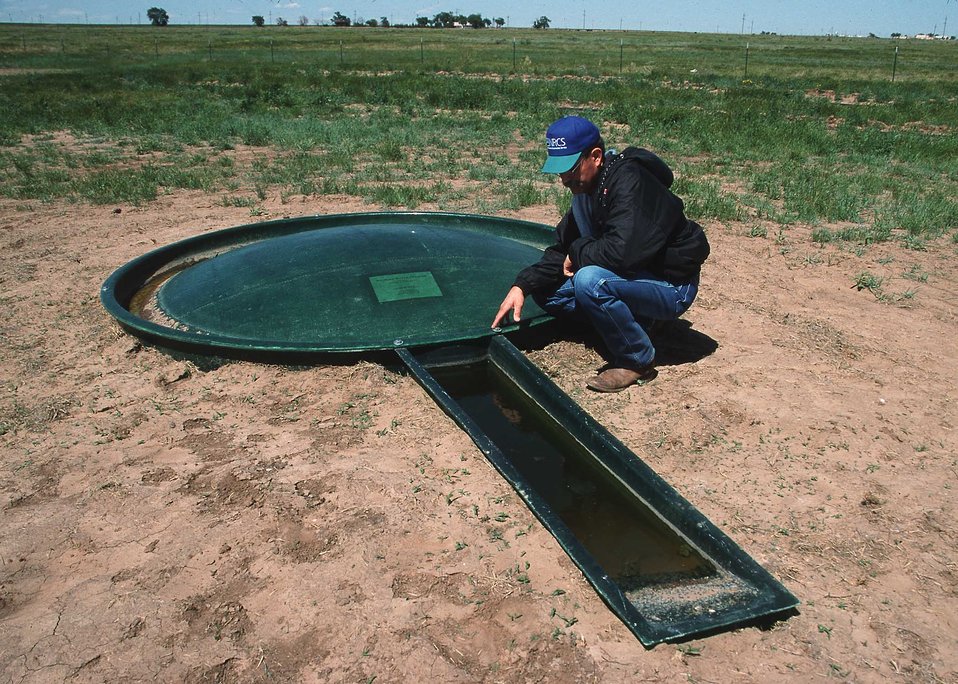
Watering device for wildlife in wildlife habitat area in eastern New Mexico.